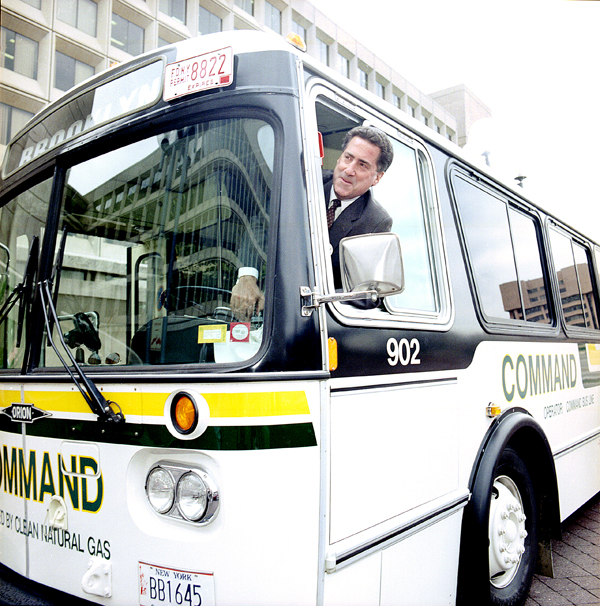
A Driving Force for Natural Gas

Since 1977, the people of the U.S. Department of Energy have been delivering the science, innovation and expertise required to advance America's energy, economic and national security. In this photo taken in June 1988, former Secretary of Energy John Herrington takes the wheel of a clean natural gas vehicle in front of the Energy Department in Washington, DC. Today, natural gas powers over 112,000 vehicles in the United States and roughly 14.8 million vehicles worldwide. Natural gas vehicles, which can run on compressed natural gas, are a good option for high-mileage, centrally-fueled fleets that operate within a limited area. | Photo courtesy of the Department of Energy.

Photo of the Week: September 28, 2012